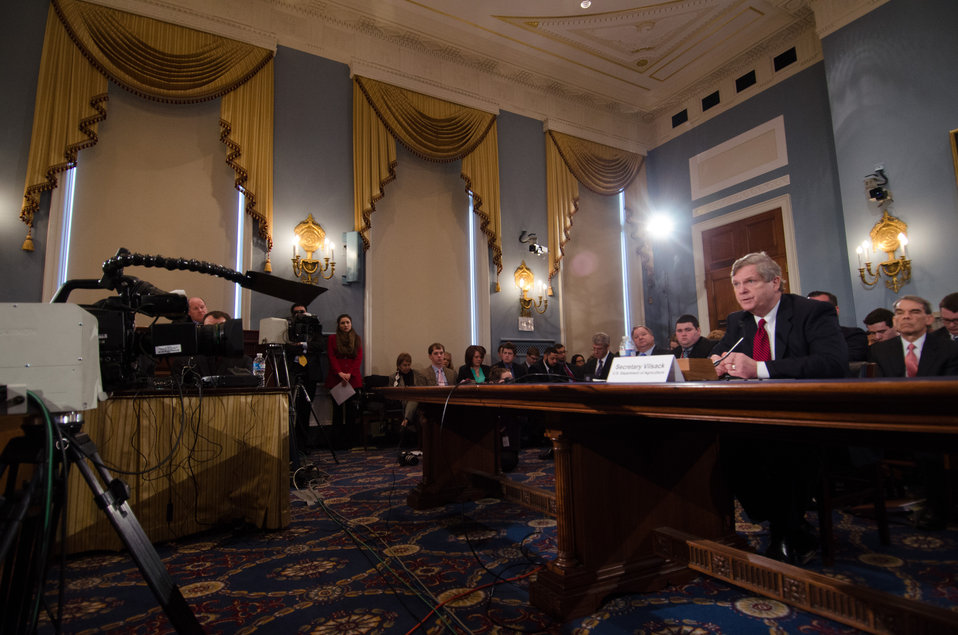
Cable news network CSPAN-3 produced a live broadcast of Agriculture Secretary Tom Vilsack testifying before the House Agriculture Committee regarding the “State of the Rural Economy“ at the Longworth Office Building in Washington, D.C. on Tuesday, Mar. 5, 2013.